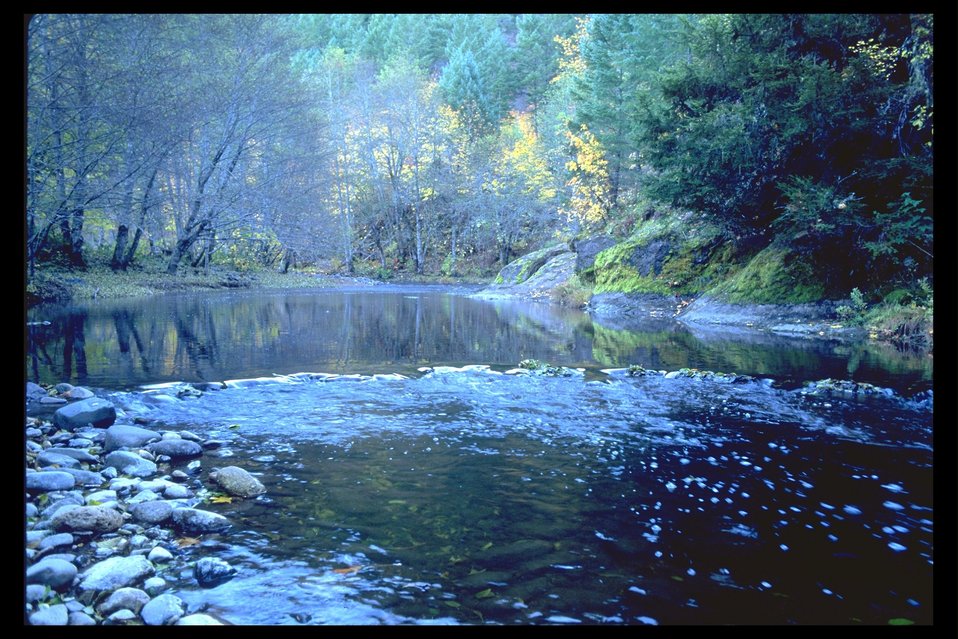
Elk Creek.